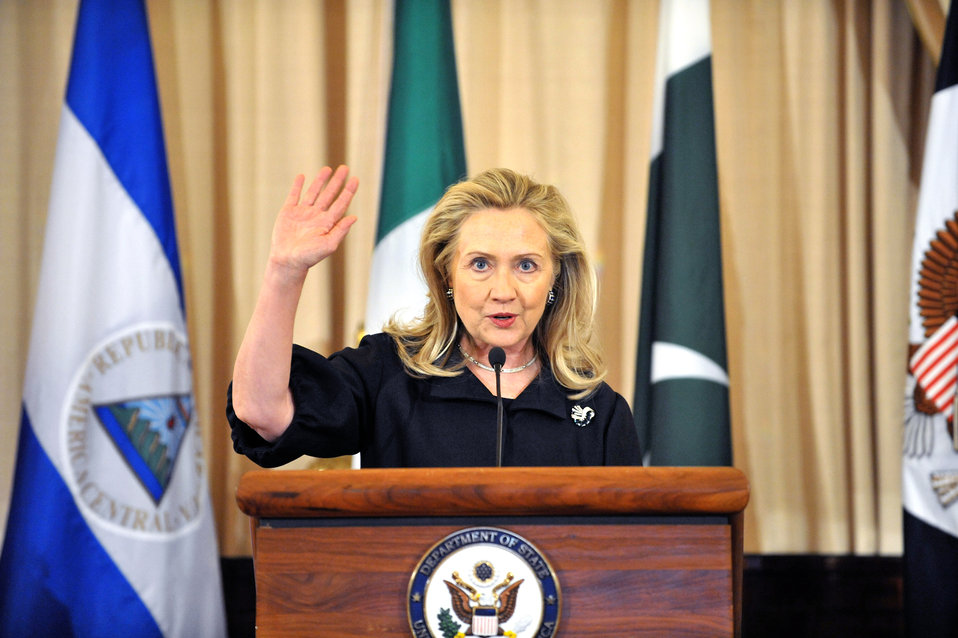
Secretary Clinton Presents the Awards for Corporate Excellence

U.S. Secretary of State Hillary Rodham Clinton presents the Awards for Corporate Excellence (ACE) to Sahlman Seafoods, Incorporated, in Nicaragua; Procter and Gamble in Nigeria; and Procter and Gamble in Pakistan, at the U.S. Department of State in Washington, D.C., on January 18, 2012.